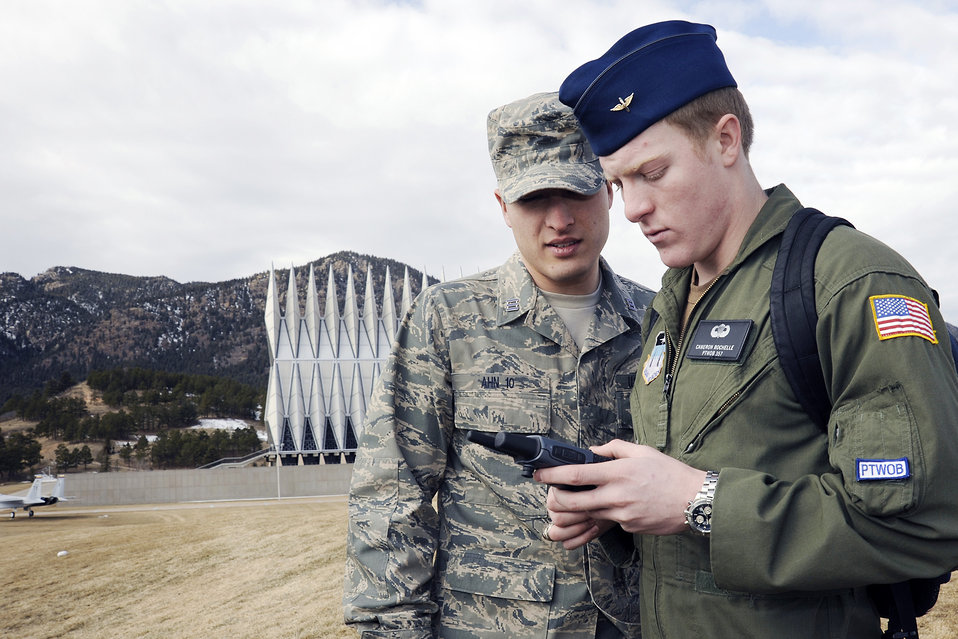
U.S. Air Force Academy, Colo-- Cadet 1st Class Christopher Ahn and Cameron Rochelle take baseline GPS measurements in preparation of a weather balloon launch as part of the Meteorology 320 course, Introduction to Meteorology and Aviation Weather. This course teaches the fundamentals of meteorology with special emphasis placed on flight weather and its impact on aviation.